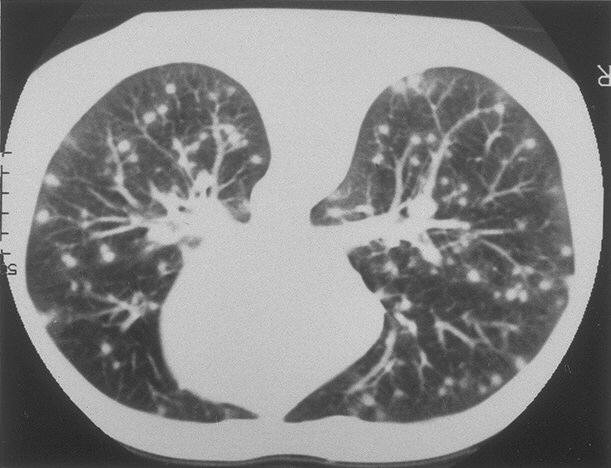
Computed tomography scan of lungs showing classic snowstorm appearance of acute histoplasmosis